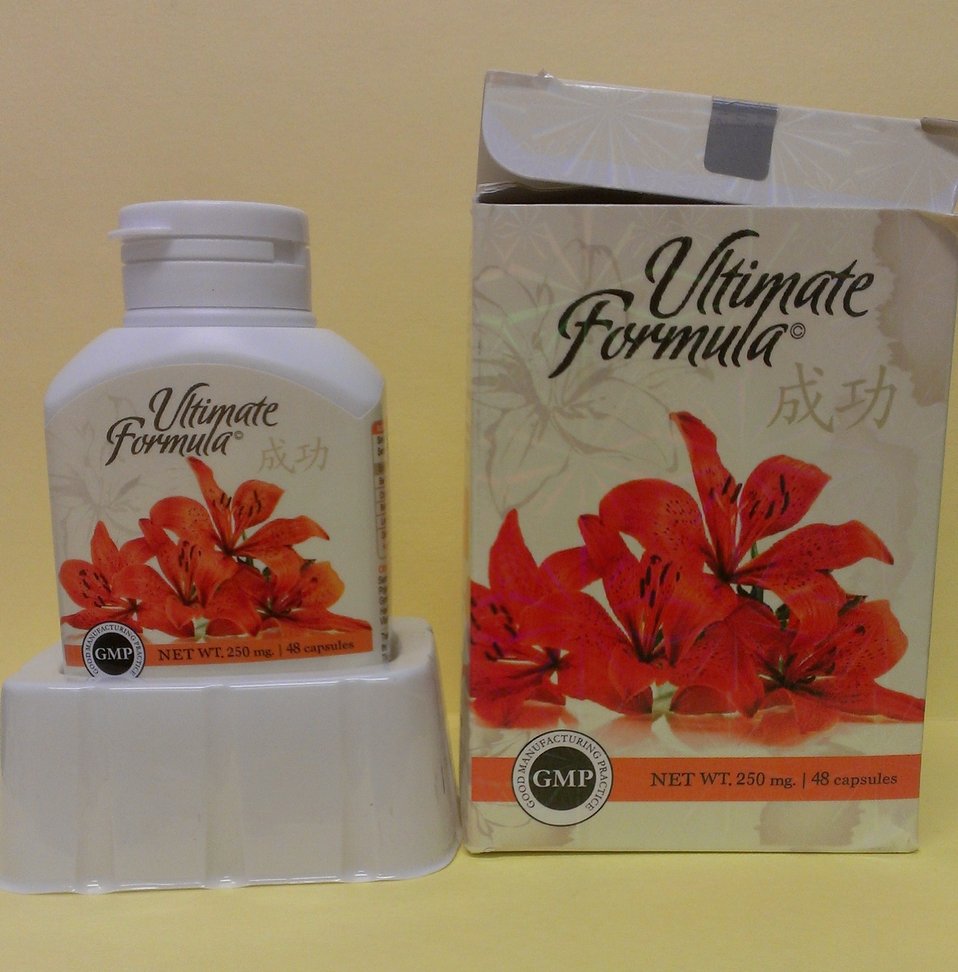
Ultimate Formula Capsules

October 24, 2012 - The FDA is advising consumers not to purchase or use Ultimate Formula Bee Pollen Capsules, a product promoted and sold for weight loss. The product was found to contain undeclared sibutramine. For more information, go to www.fda.gov/drugs/resourcesforyou/consumers/buyingusingme...

And read this Consumer Update: Beware of Fraudulent ‘Dietary Supplements’